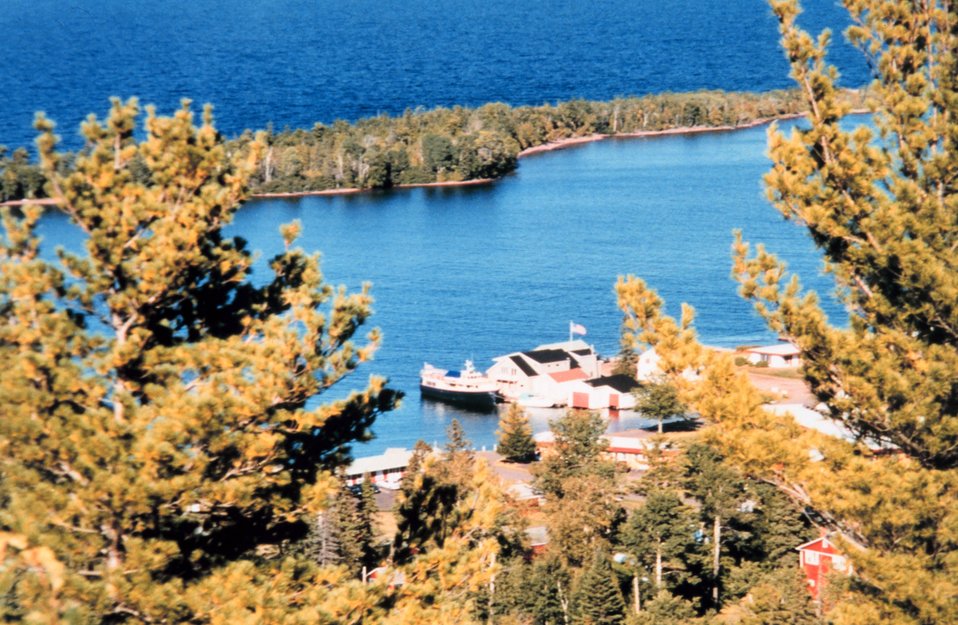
Houghton County